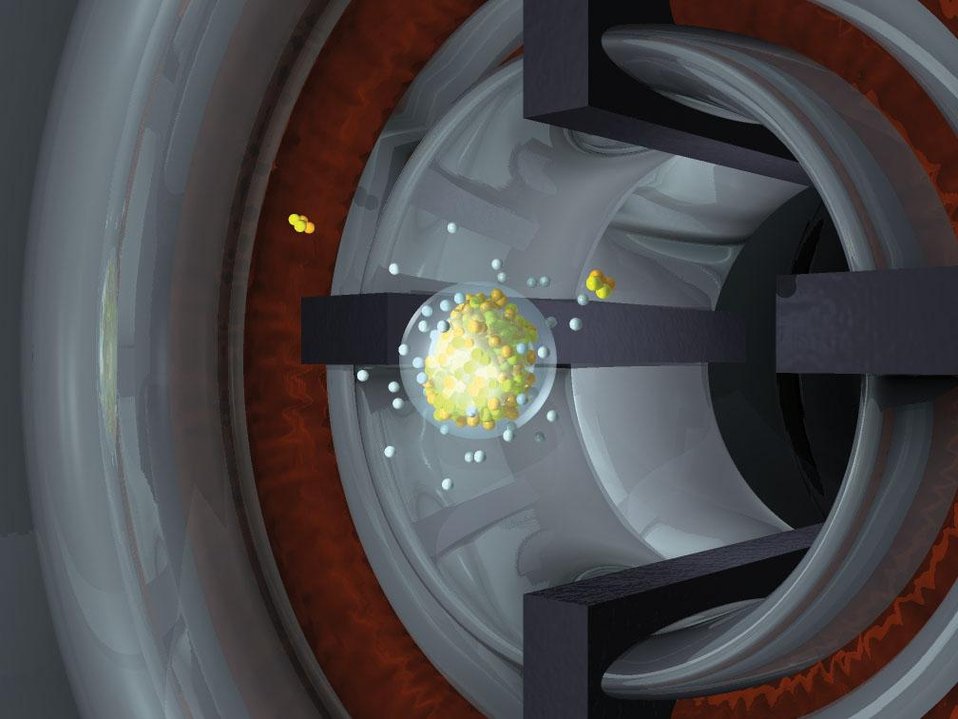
SIMULATION OF RESIDUE THE COLLISION CREATES THE NEW 115 ELEMENT THAT BEGINS DECAYING WITH THE EMISSION OF ALPHA PARTICLES INTO ELEMENT 113.

SCIENTISTS AT DOE'S LAWRENCE LIVERMORE NATIONAL LABORATORY, IN COLLABORATION WITH RESEARCHERS FROM THE JOINT INSTITUTE OF NUCLEAR RESEARCH (JINR) IN RUSSIA, HAVE DISCOVERED THE TWO NEWEST SUPER-HEAVY ELEMENTS, ELEMENT 113 AND ELEMENT 115. IN THESE DECAY CHAINS, ELEMENT 113 IS PRODUCED VIA THE ALPHA DECAY OF ELEMENT 115. THE EXPERIMENTS PRODUCED FOUR ATOMS EACH OF THE TWO ELEMENTS THROUGH THE FUSION REACTION OF CALCIUM-48 NUCLEI IMPINGING ON AN AMERICIUM-243 TARGET.